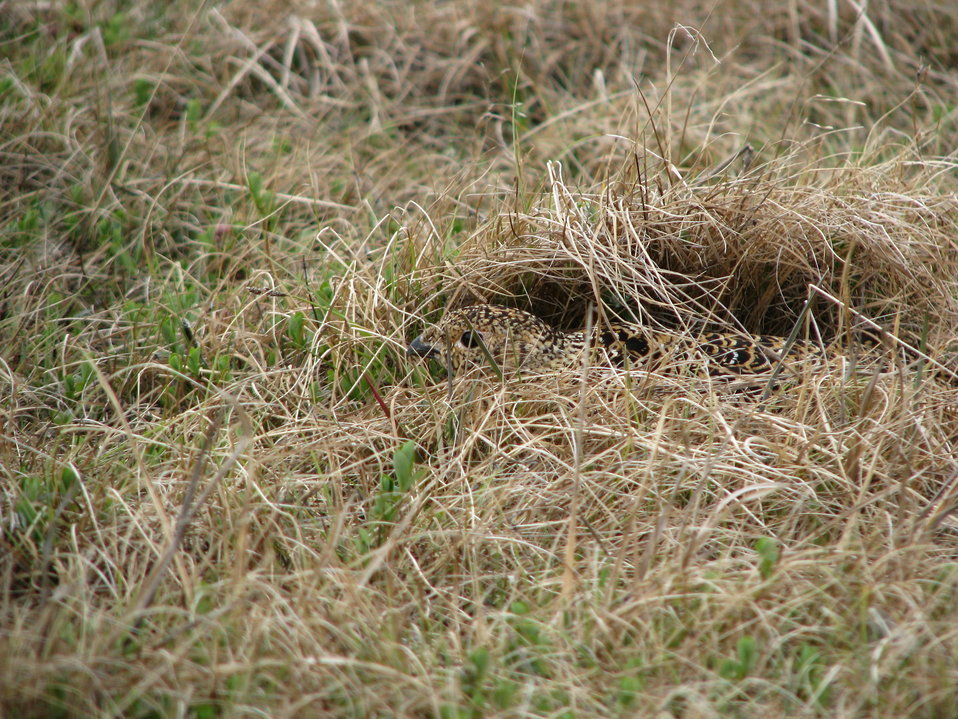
Ptarmigan on nest

Yukon Delta NWR